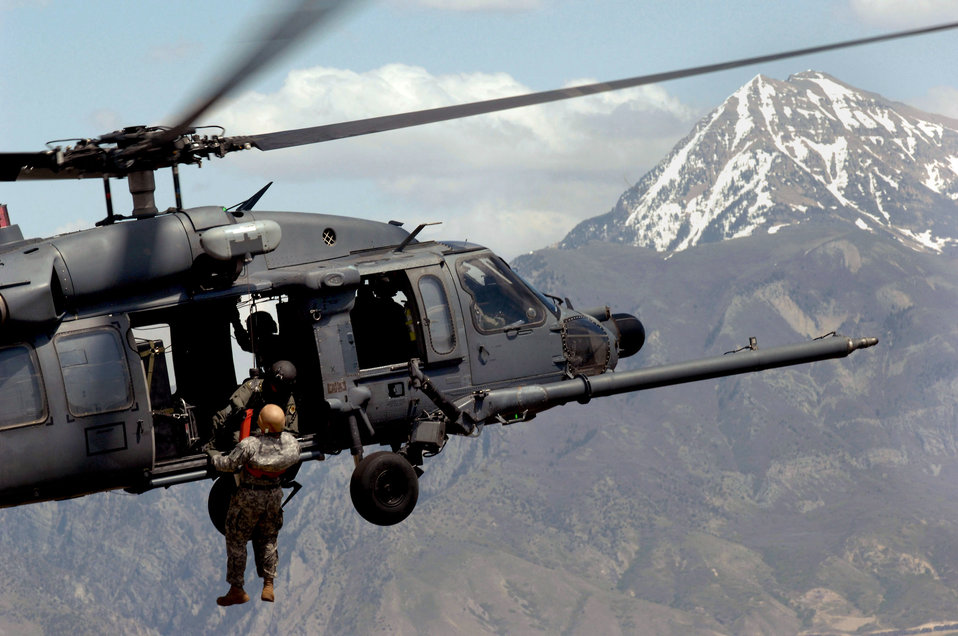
Bringing him home safely

A Utah Army National Guard Soldier is lifted aboard an Air Force HH-60 Pave Hawk over the Utah Test and Training Range May 3 during a combat search and rescue exercise. The 34th Weapons Squadron from Nellis Air Force Base, Nev., led the search and recovery training.